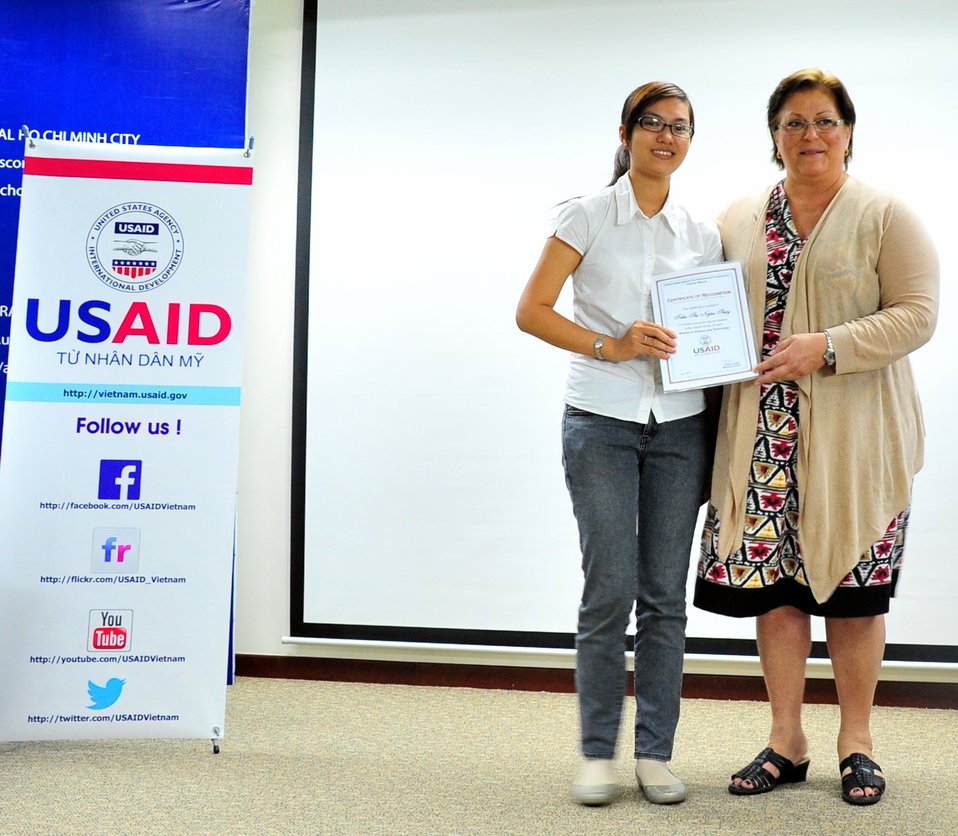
Women in Science and Technology Essay Contest Award Ceremony

U.S. Embassy Deputy Chief of Mission Claire Pierangelo presents a certificate of recognition to Ms. Tran Thi Ngan Thuy, a student from University of Finance and Marketing, who is among top 10 finalists in the USAID Women in Science and Technology Essay contest, on May 16, 2013.